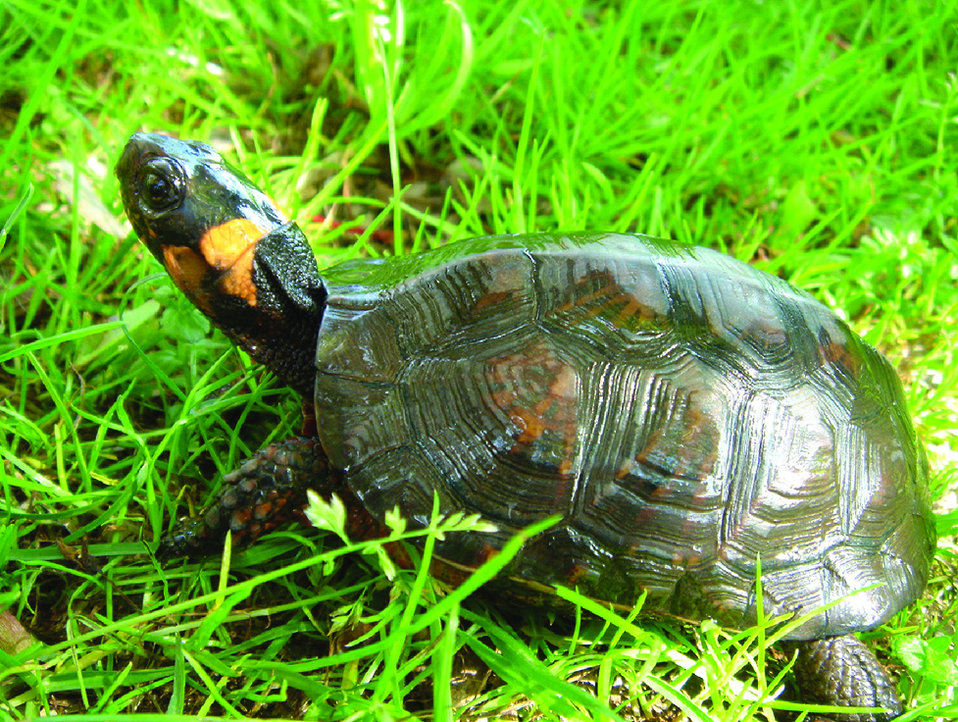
Bog turtle.